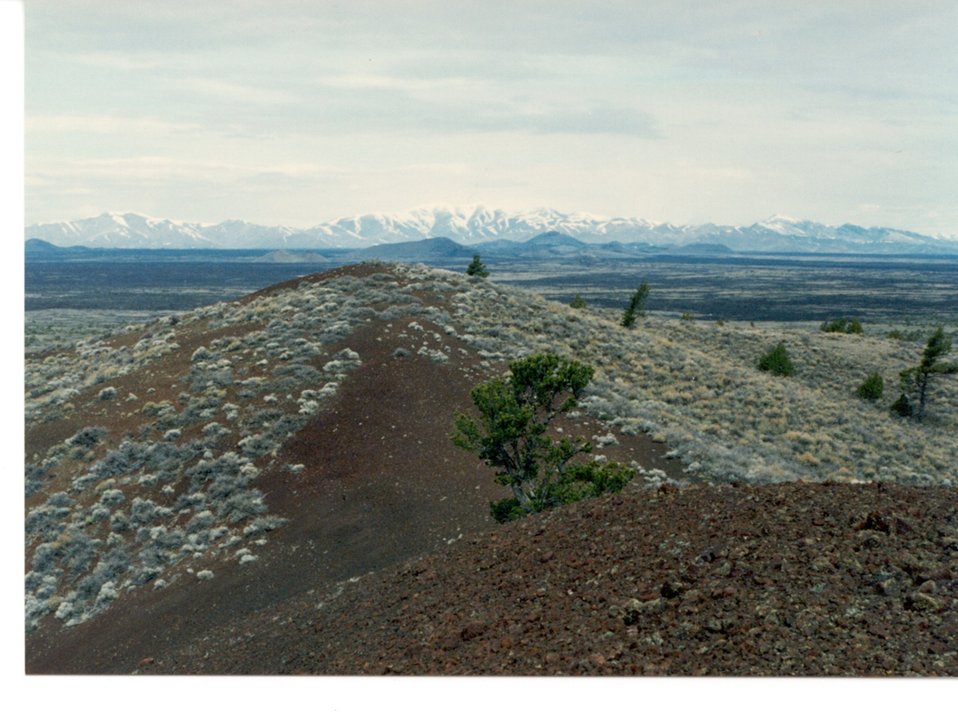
Craters of the Moon Monument from top of Black Tail Craters of the Moon Shoshone Field Office USRD Upper Snake River District